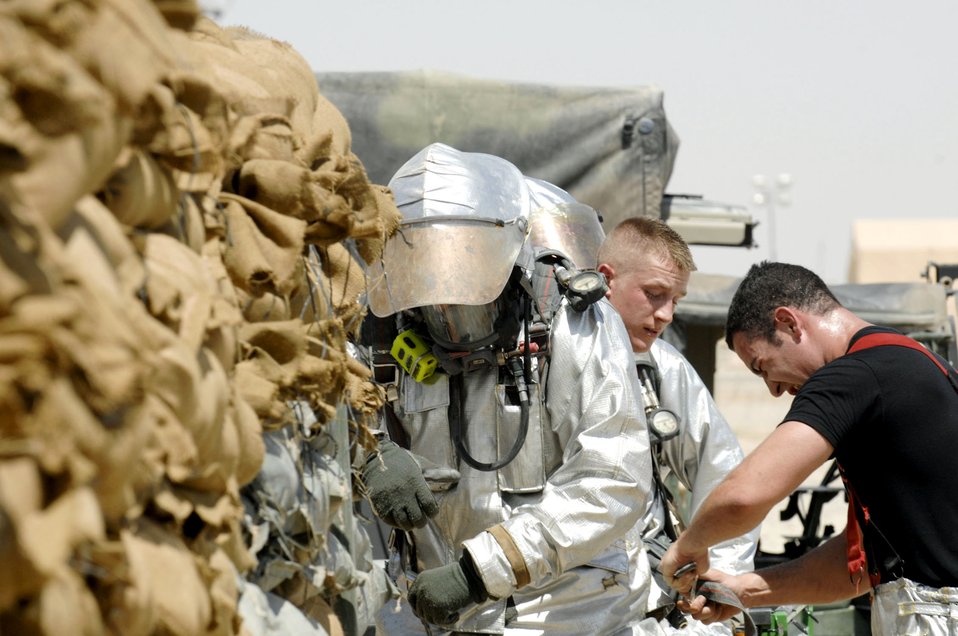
Fire fight in Iraq for the Army

Firefighters perform a pre-entry safety check before attempting to battle a fire in the Army Motor Pool June 19 on Camp Adder, Iraq. Due to munitions contained in the building and no potential for loss of life, the firefighters switched to defensive operations for the blaze using six trucks to keep it under control and confined to the building. The firefighters are from the 407th Expeditionary Civil Engineer Squadron at Ali Air Base, Iraq.